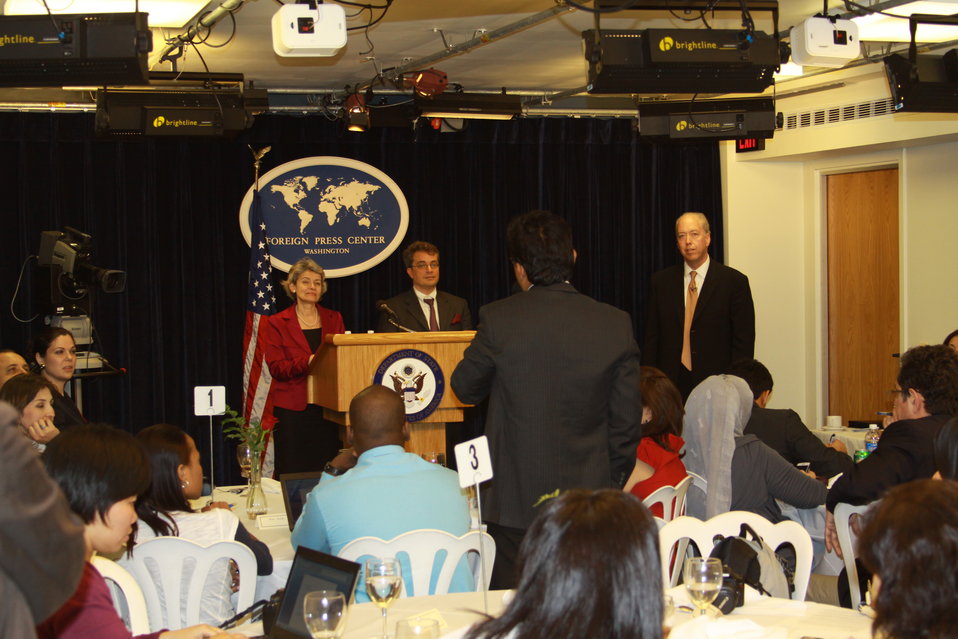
Irina Bokova, Director General for UNESCO, and Ambassador David Killion, U.S. Permanent Representative to UNESCO, call on a journalist who has a question at a luncheon at the Foreign Press Center, as a part of the 2011 World Press Freedom Day Global Conference in Washington, D.C., on May 3, 2011.